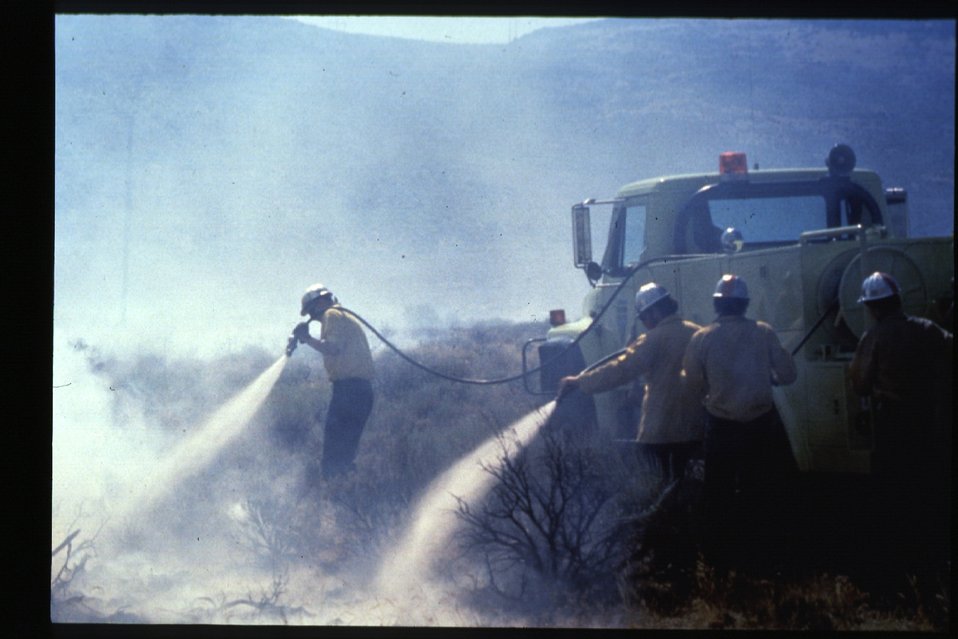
Boise Foothills Fire Danskin Mountains and South Fork of Boise River Wild Fire Fighters Four River Field Office LSRD Lower Snake River District